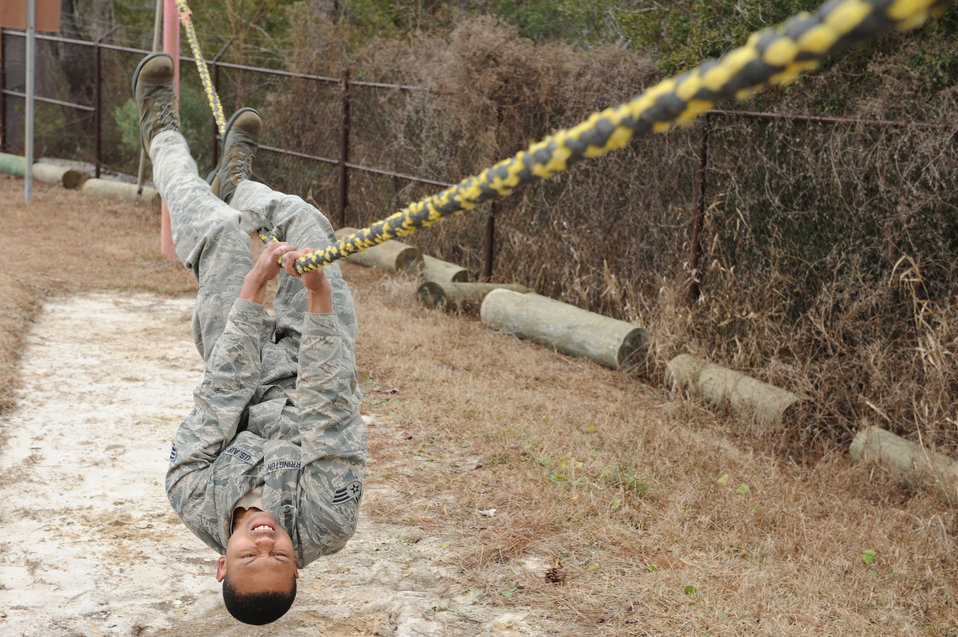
Combat control candidates vie for shot at scarlet beret

Senior Airman Travian Fearrington proceeds through the tactical air control party obstacle course Feb. 9, 2011, at Hurlburt Field, Fla. The Airman was taking part in a combat controller and special operations weather team assessment. Airman Fearrington is assigned to the 5th Force Support Squadron at Minot Air Force Base, N.D. He is a cross-training candidate for the combat controller career field.